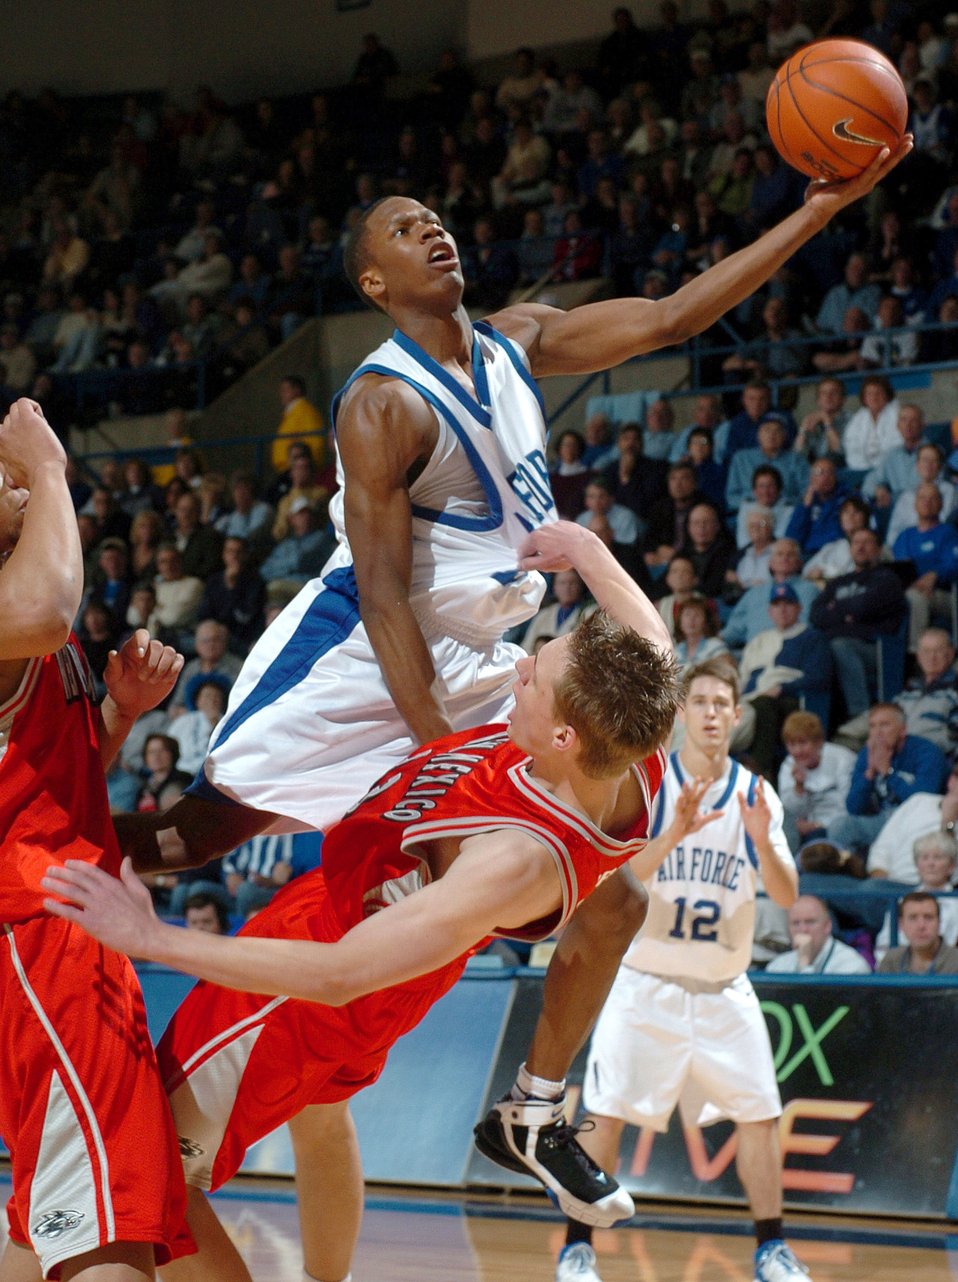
Falcons to play NCAA

U.S. Air Force Academy senior Antoine Hood gets aggressive against New Mexico on Feb. 22. The Falcon’s will be making their second NCAA Tournament appearance in the last three years when the face off with Illinois at Cox Arena in San Diego, Calif., Thursday, Mar. 16.